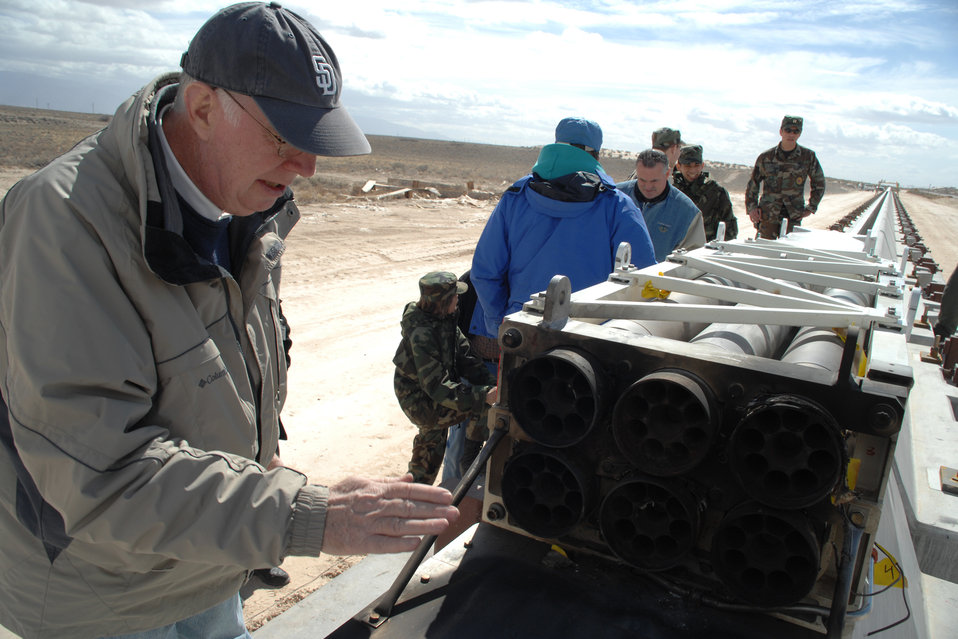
Test track

Alan Langhorn performs a levitation-magnet inspection after a successful launch of a rocket sled Feb. 21 at Holloman Air Force Base, N.M. The launch was the 846th Test Squadron's fifth magnetic-levitation developmental test.